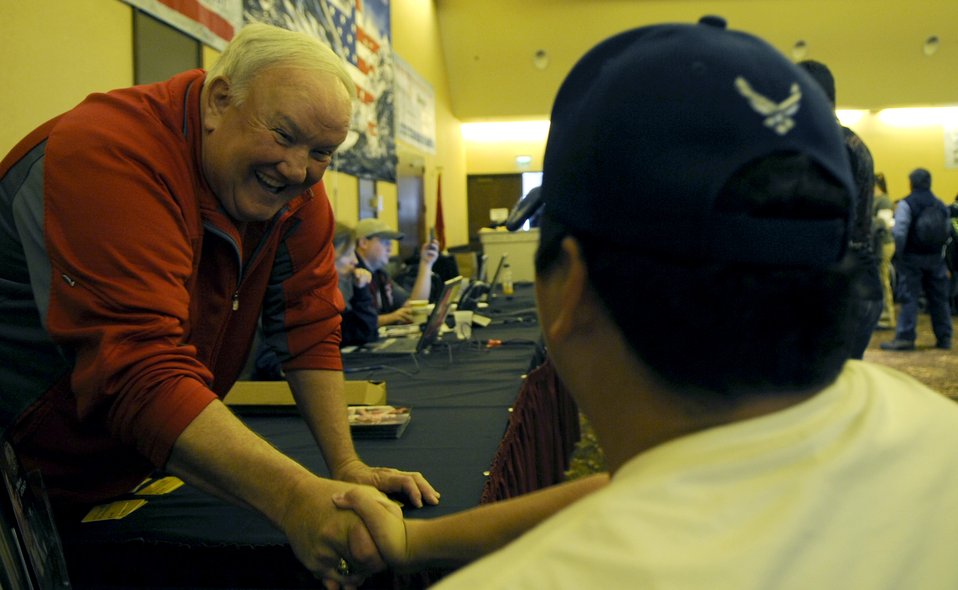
Winter rehabilitation clinic shows veterans potential

Senior Airman Kevin Krogh shakes hands with Larry Barnett inside The Silver Tree Hotel March 29 during registration for the 23rd National Disabled American Veterans Winter Sports Clinic in Snowmass Village, Colo. Airman Krogh lost both legs in a major car accident in 2007 and this will be his first year attending the sports clinic. Airman Krogh is assigned to Fort Sam Houston in San Antonio. Mr. Barnett is a former umpire in Major League Baseball.